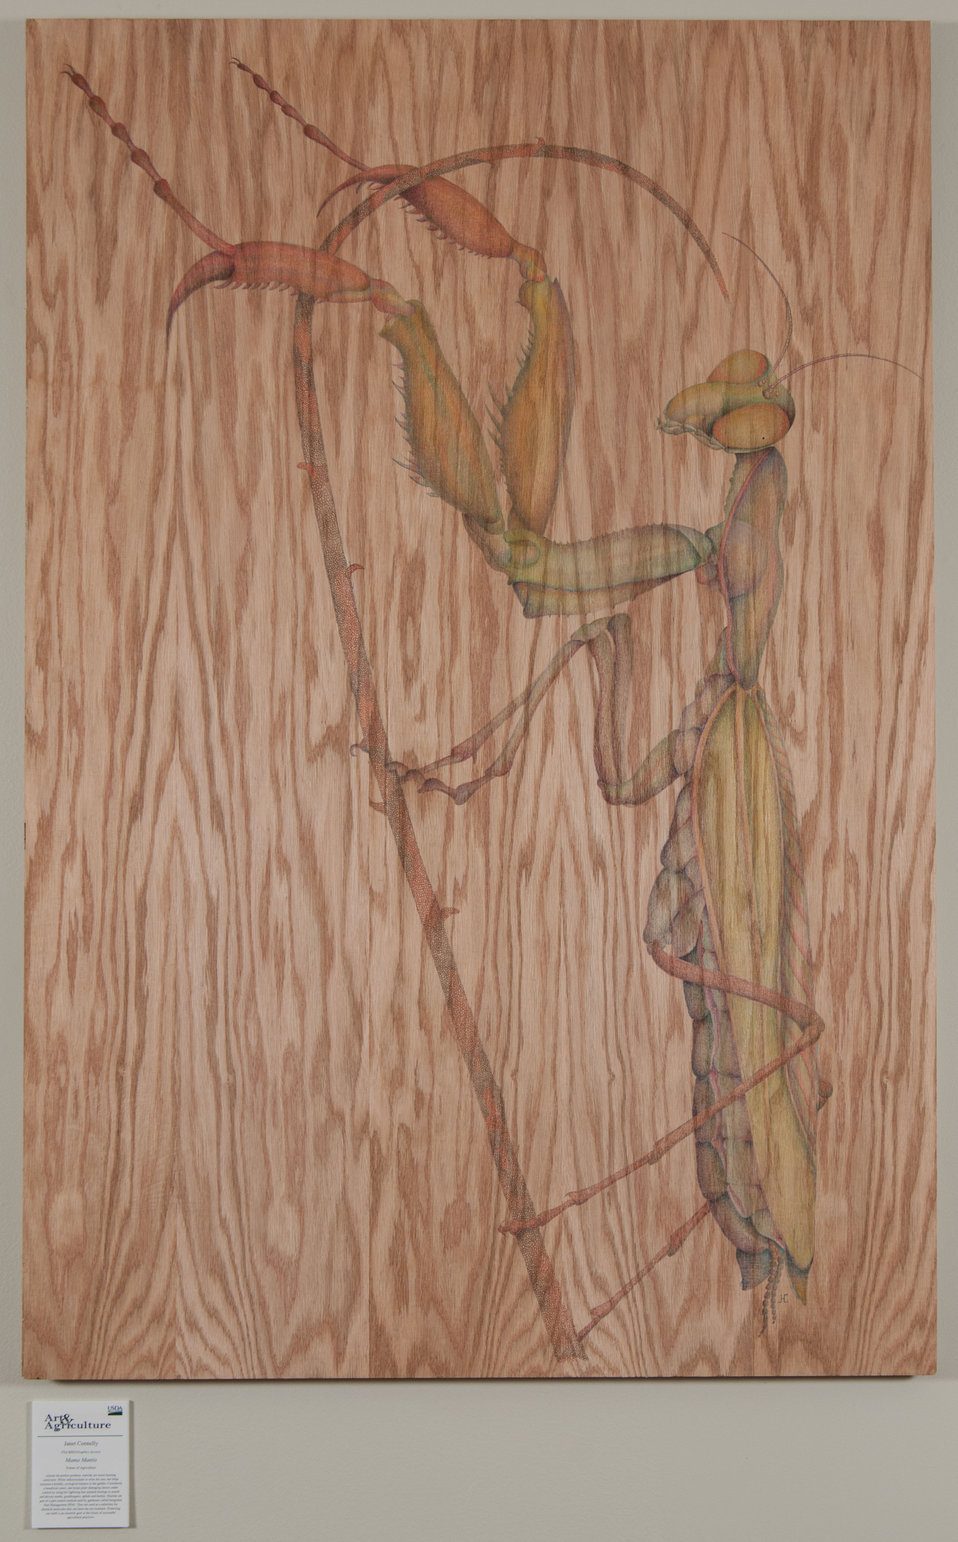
Online Viewer's Choice entries of the 2013 Art & Agriculture, Tuesday, July 9, 2013, in the South Building, Washington, D.C. Themes were expressed by employees from across the department and the contest was open to full-time and part-time USDA employees. Winning artwork will be displayed till the end of the year. U.S. Artistic expression is a creative outlet that is vital for an individual to grow and develop.